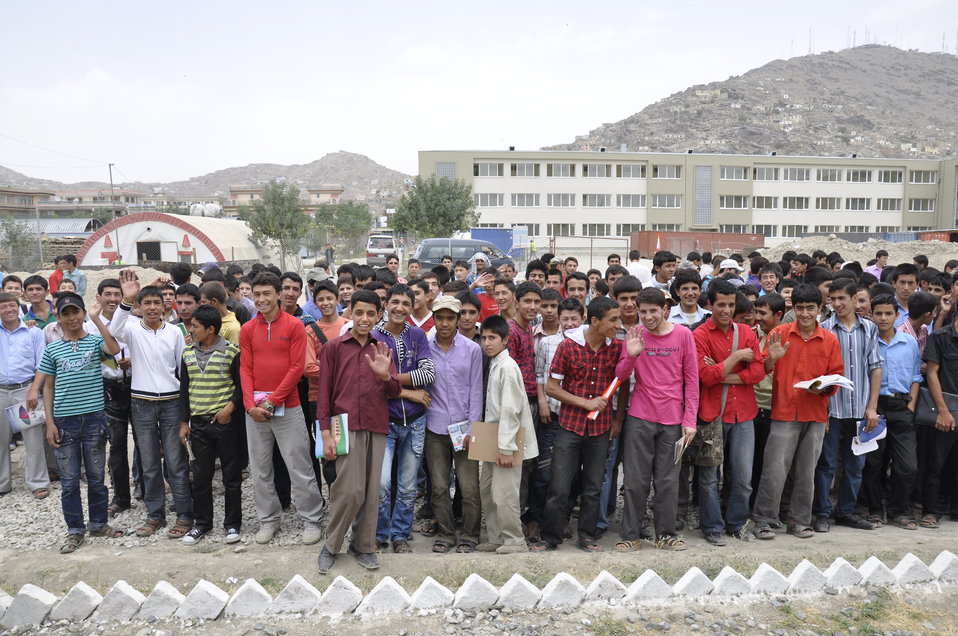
Ghazni High School in Kabul